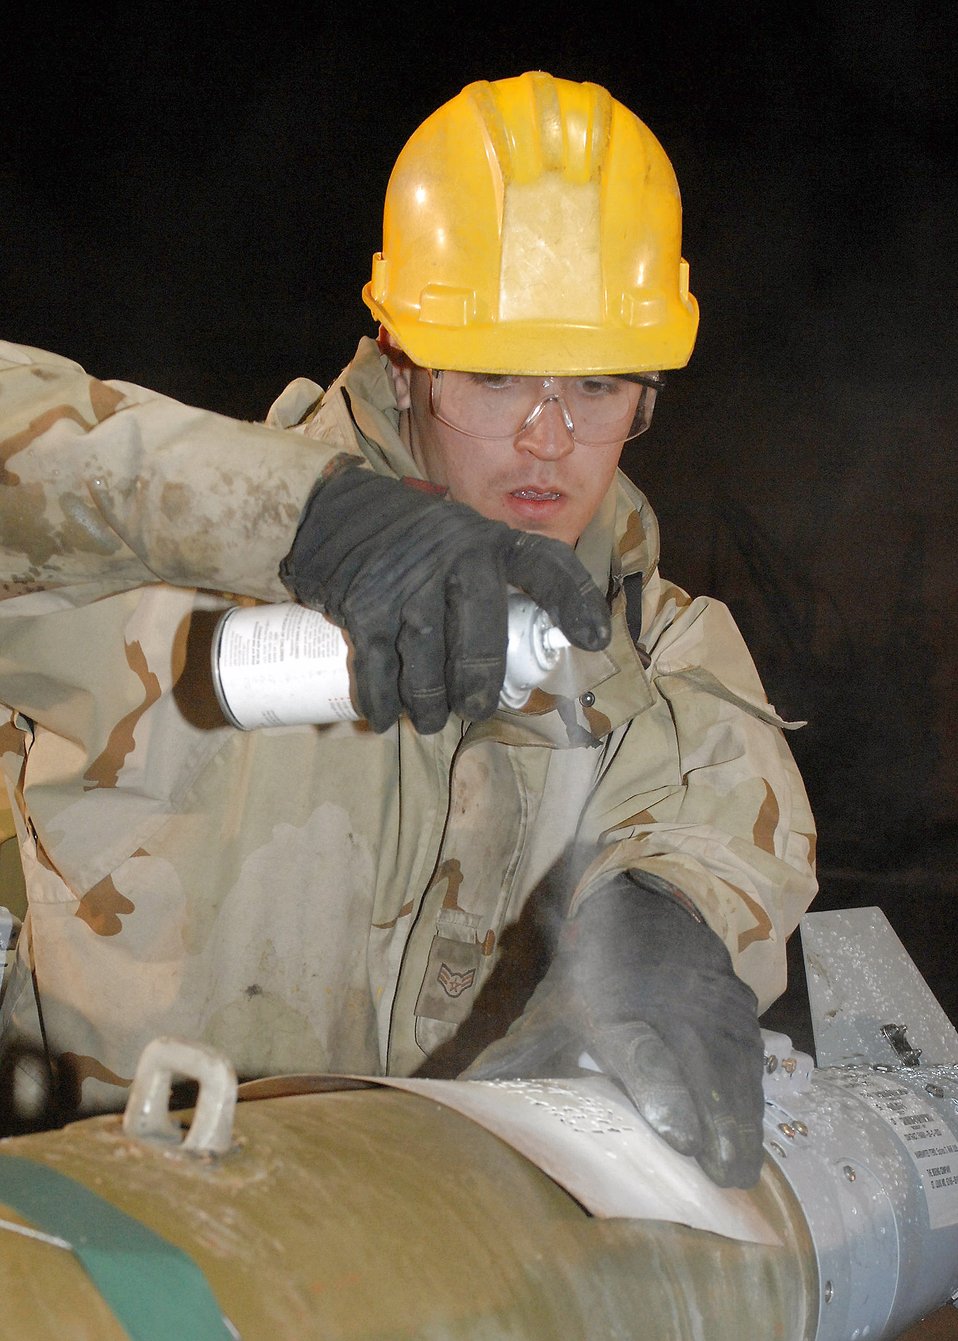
How to build a bomb

Airman 1st Class Jedediah McClain paints fuse settings on bombs for identification by loaders and pilots Feb 14 at Bagram Air Base, Afghaniston. Airman McClain is a munitons troop with the 455th Expeditionary Maintenance Squadron here and is deployed from the 4th Equipment Maintenance Squadron, Seymour Johnson Air Force Base, N.C.